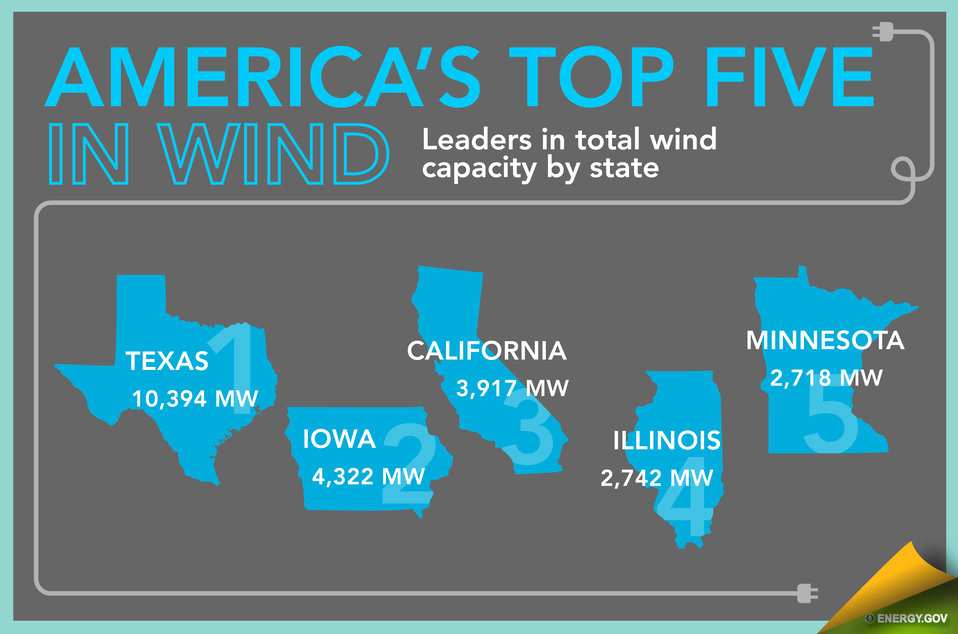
Wind Energy in America - Slide 6